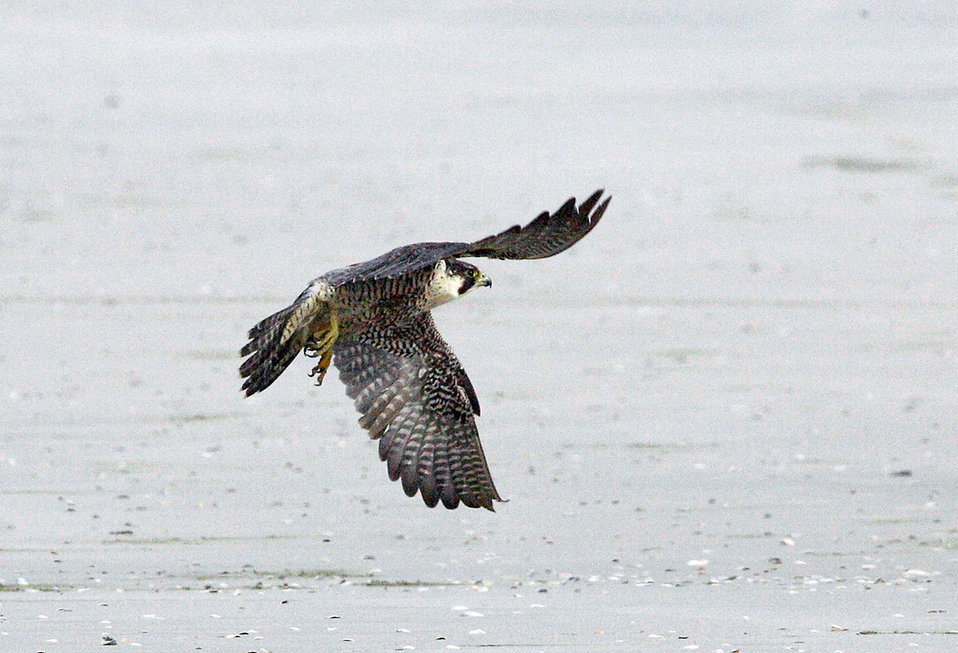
Peregrine Falcon

The peregrine falcon is just one of the species at Blackwater National Wildlife Refuge that could be affected by climate change and sea level rise.